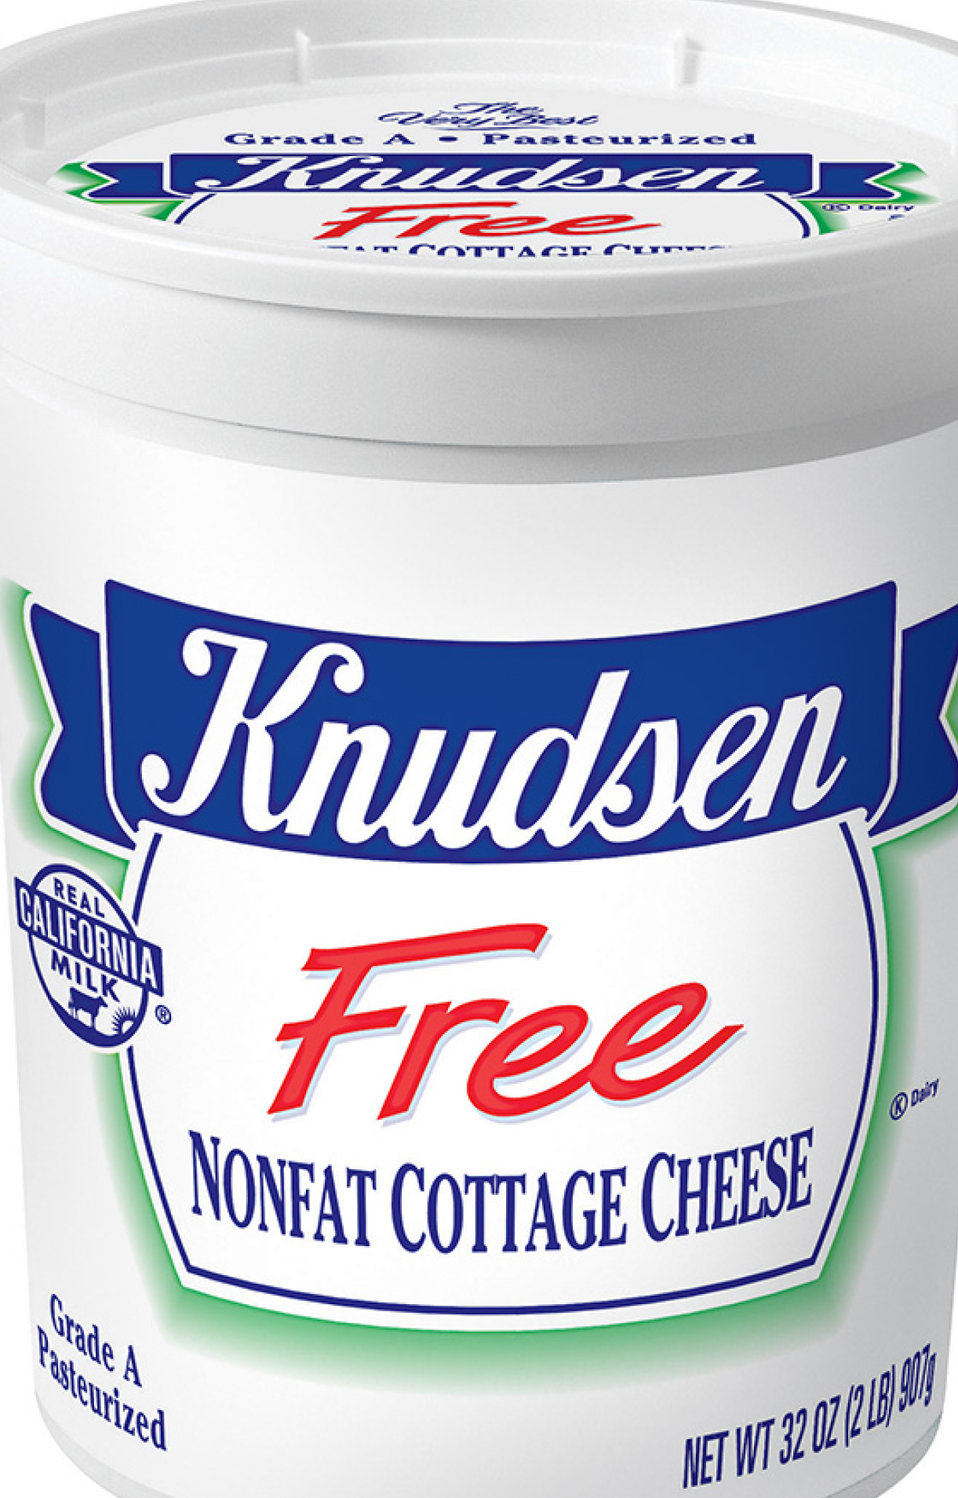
RECALLED – Cottage Cheese products

May 17, 2014 – Product Recall – Kraft Foods Group Voluntarily Recalls Select Cottage Cheese Products Due to Out-of-Standard Storage Temperatures
Certain Knudsen Cottage Cheese, Breakstone’s Cottage Cheese, Simply Kraft Cottage Cheese and Daily Chef Cottage Cheese Products Included in the Recall
.